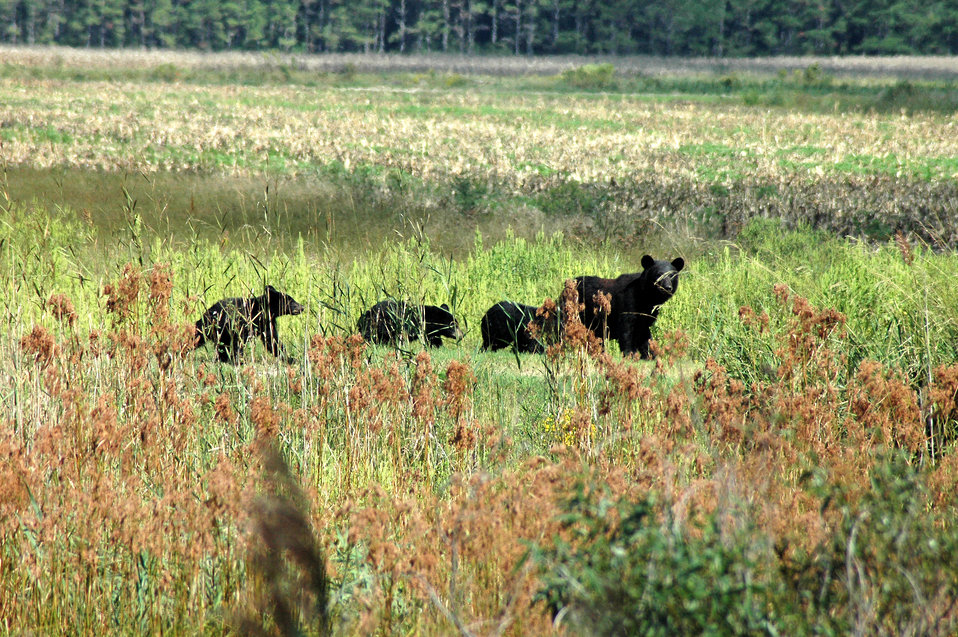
black bear mother and cubs

A black bear leads her cubs across the Alligator River National Wildlife Refuge, NC